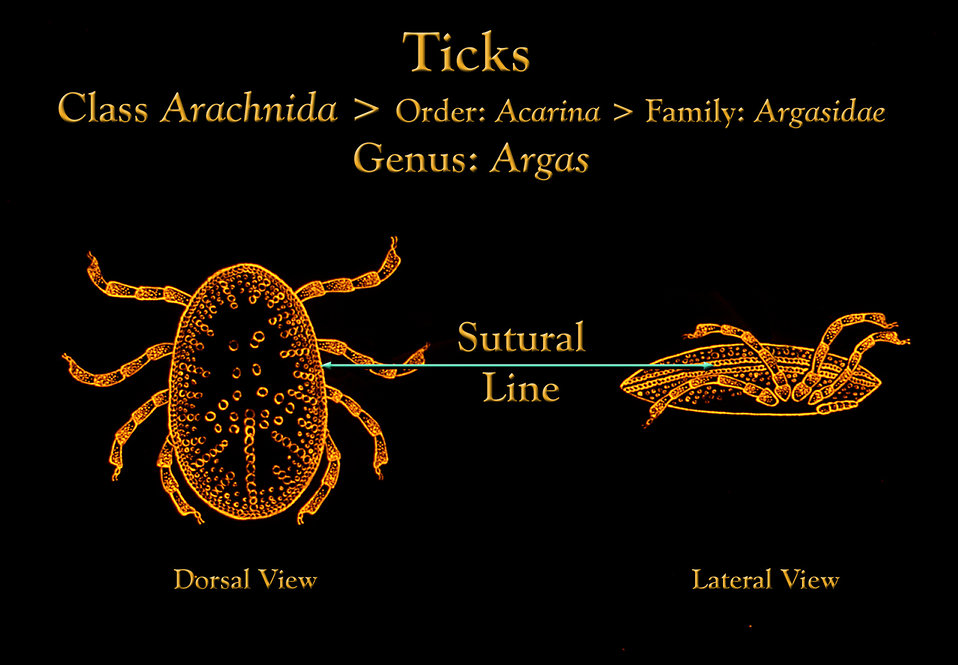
This drawing depicts an Argas soft tick, which has a definite sharp edge or circumferential sutural line.